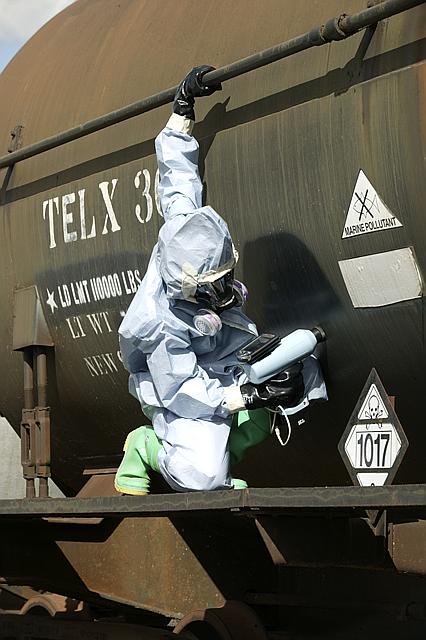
U.S. customer's inspectors are being trained at DOE's Hazardous Materials Management and Emergency Response (HAMMER) Training Center on the Hanford Site to use acoustic inspection devices developed at Pacific Northwest National Laboratory to identify weapons and explosives. This collaboration helps to make homeland security a little tighter.